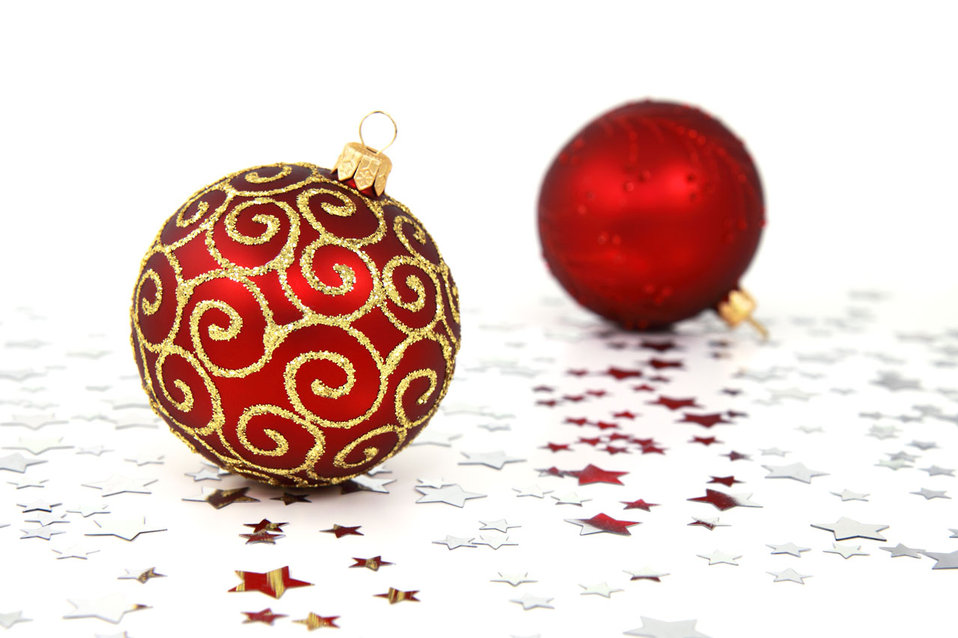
Christmas baubles

Two red christmas baubles with silver stars.